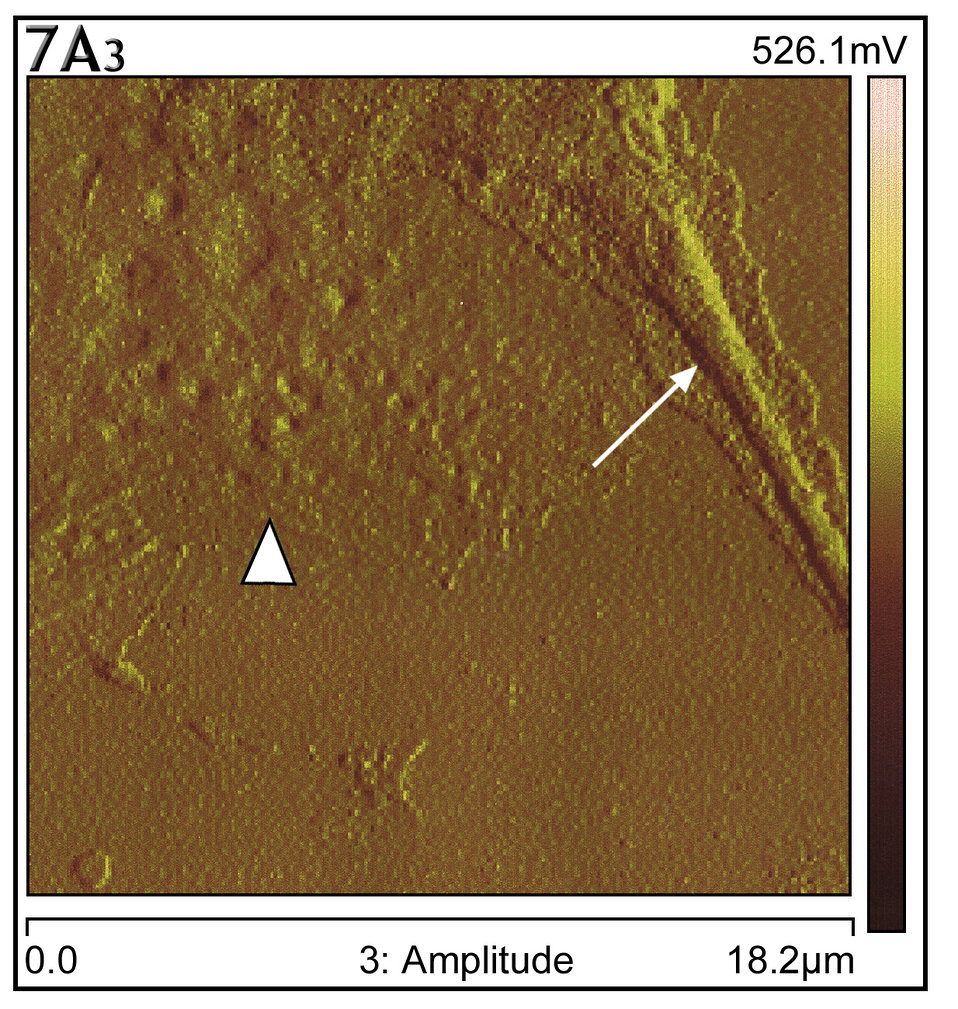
This AFM showed gross thickening of cell cytoplasmic skeletal filaments within the cell surface pseudopodia (arrow).